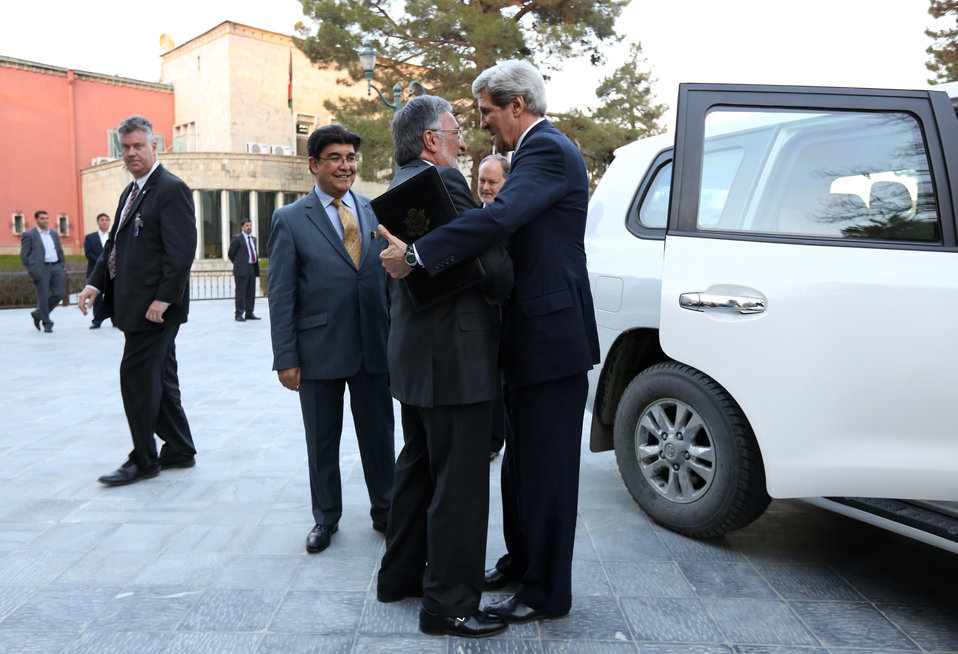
Secretary Kerry Arrives in Afghanistan

U.S. Secretary of State John Kerry embraces Afghan Foreign Minister Zalmai Rassoul at the Presidential Palace in Kabul, Afghanistan on March 25, 2013.